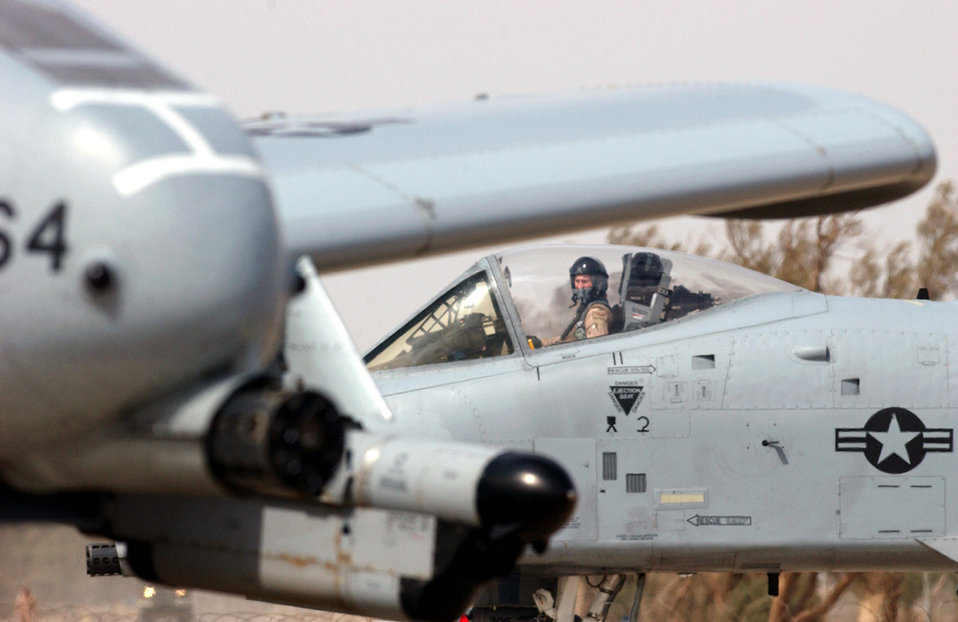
Thunderbolt fuel

OPERATION IRAQI FREEDOM -- An A-10 Thunderbolt II pilot taxis into position for a